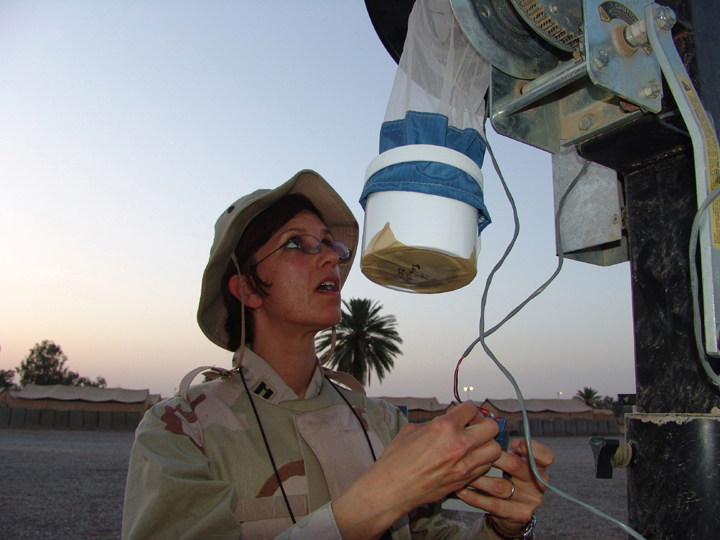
Deployed Airmen use 'germ warfare' to ensure force readiness

BAGHDAD, Iraq -- Capt. Gabrielle Childs sets a trap to catch sand flies and mosquitoes that will be tested for insect-borne diseases that threaten U.S. forces deployed to Iraq. She is assigned to the 447th Expeditionary Medical Squadron's public health flight and is deployed from Luke Air Force Base, Ariz.